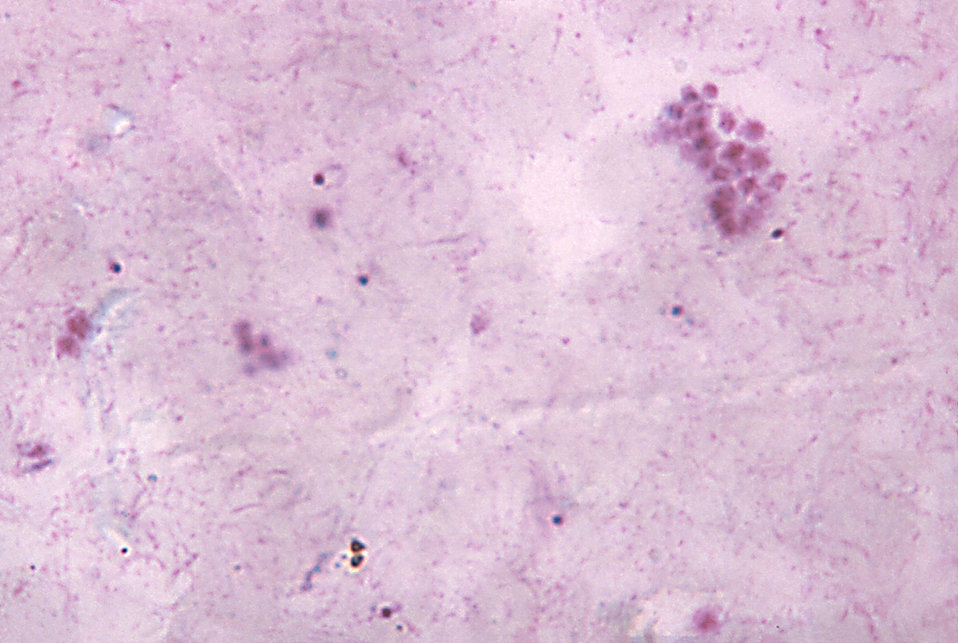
This thick film micrograph reveals P. falciparum rings amongst debris with chromatin only, and no visible cytoplasm.